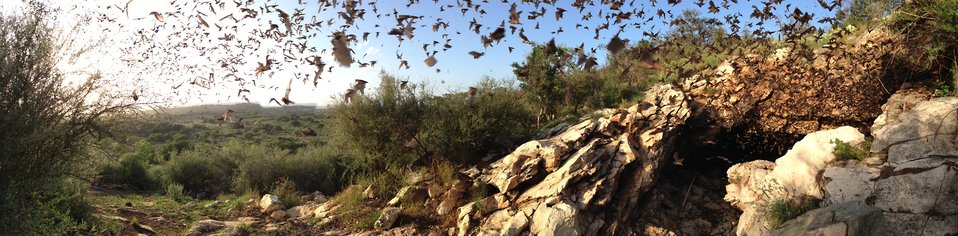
Bats emerging from Davis Cave